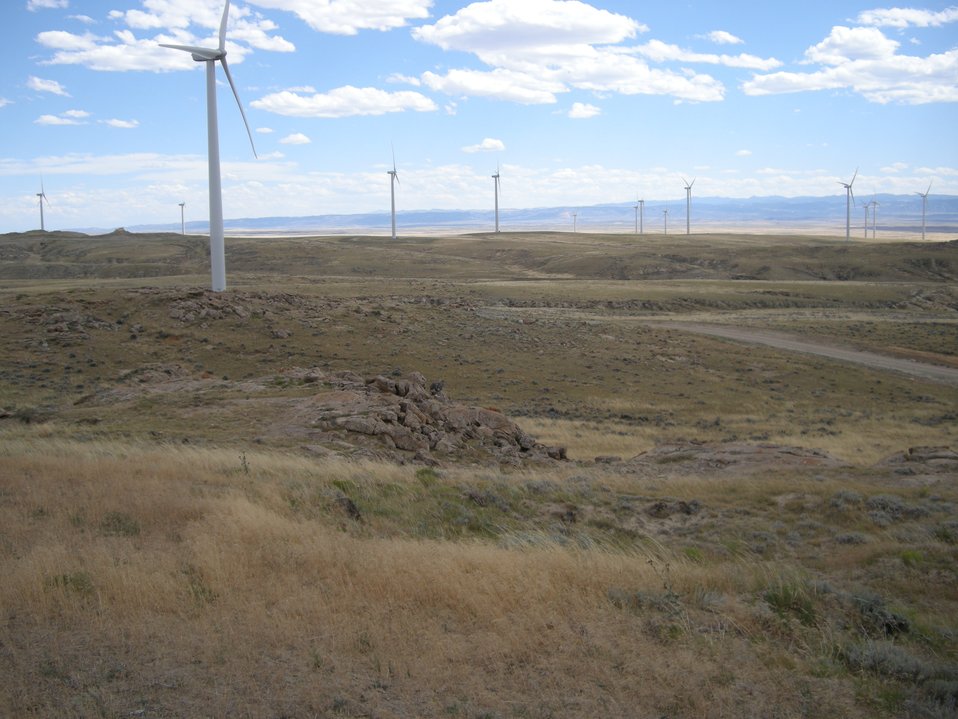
Raptor Project Wind Energy

Renewable energy such as wind turbines, and non-renewable energy development are a concern to the conservation of Wyoming's raptors.